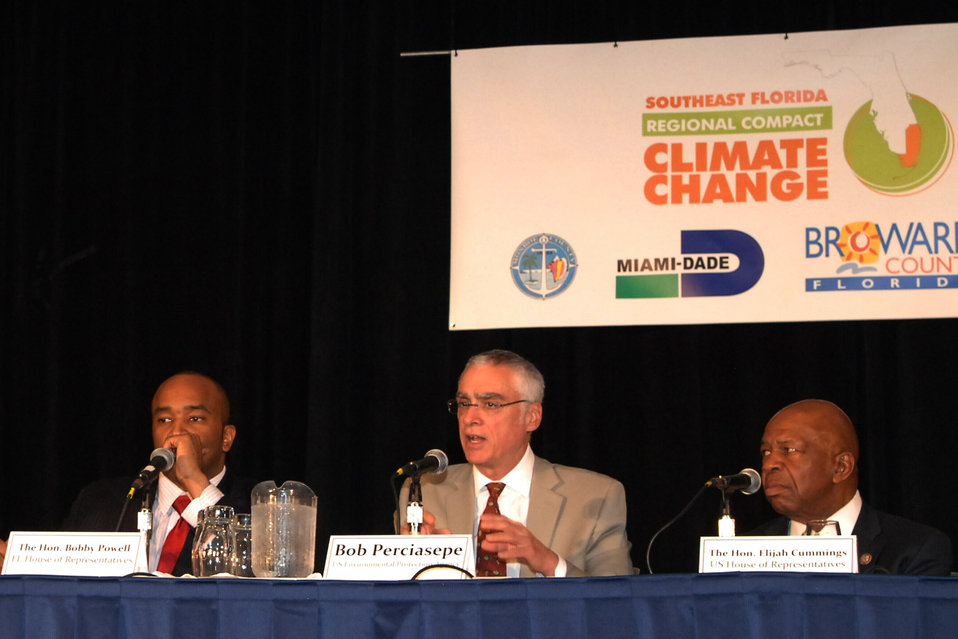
Climate Change Summit

Deputy Administrator Bob Perciasepe joined Congressmen Elijah Cummings, Lois Frankel, and Patrick Murphy, along with the Mayor of Broward County, Kristin Jacobs, and Representative Bobby Powell from the Florida House of Representatives for a panel on climate change in southern Florida.